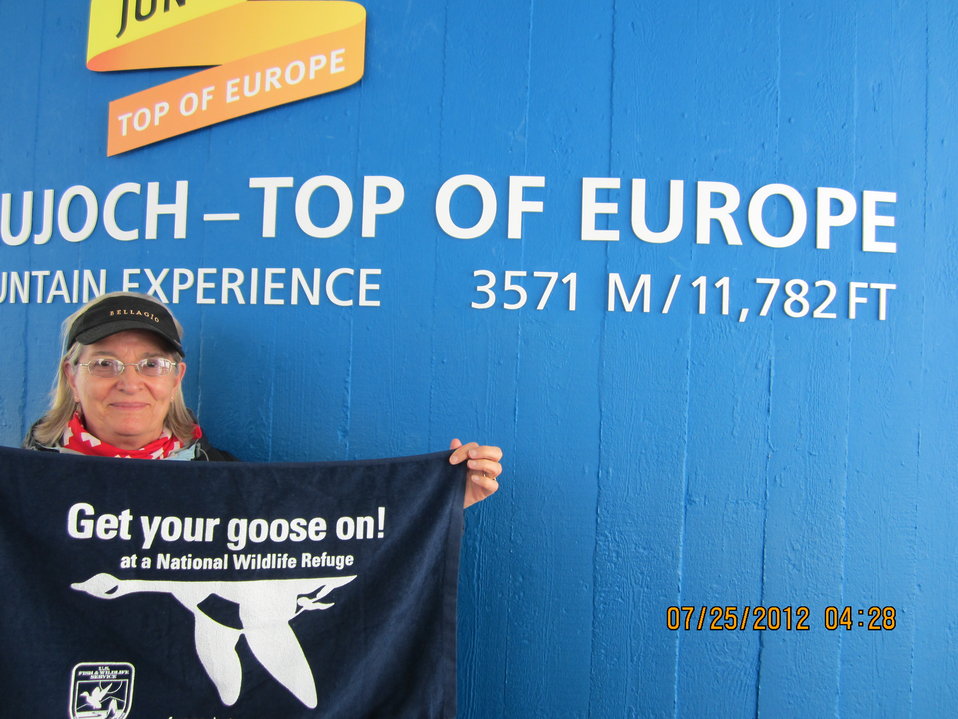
Get Your Goose On!

Mont Blanc - Highest point in Europe!